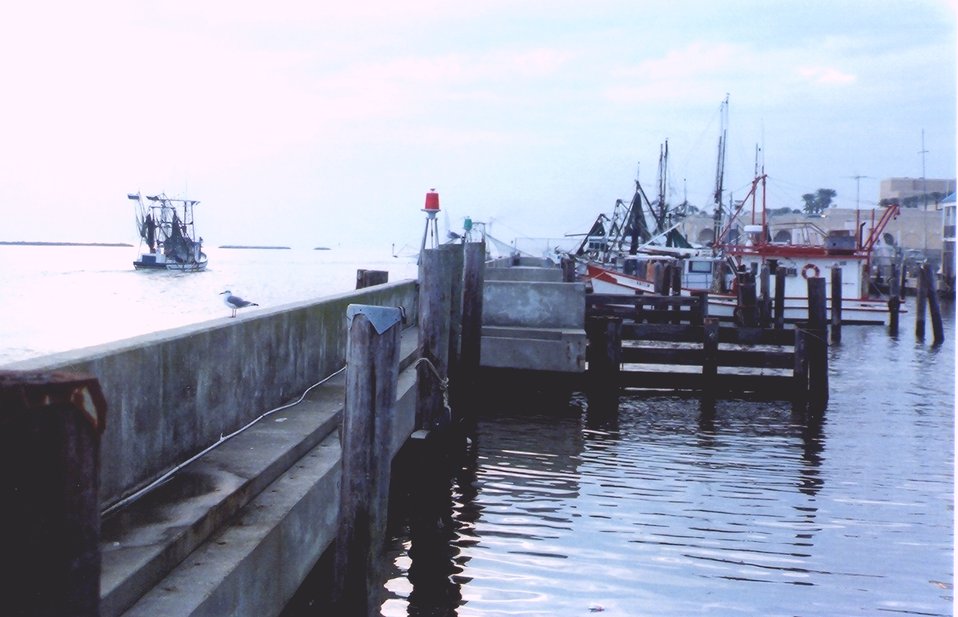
Shrimp boat docks.